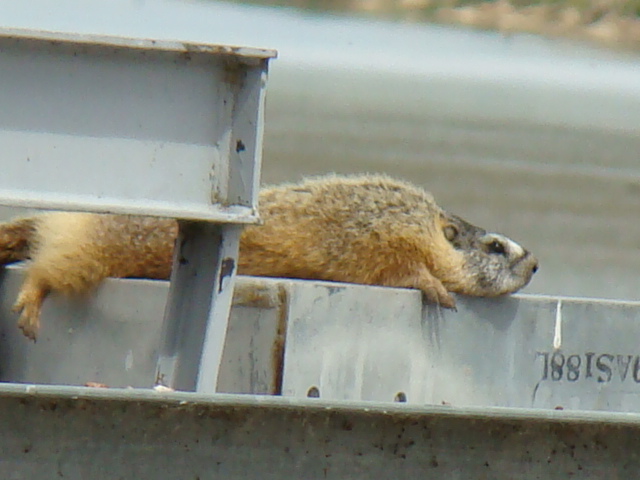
Yellow-bellied Marmot

The lands of Benton Lake National Wildlife Refuge were established to protect and provide habitat for migratory birds that cross state lines and international borders and are by law a Federal trust responsibility.

The refuge is of great value to waterfowl and shorebirds, as well as other migrating water-dependent bird species, because of the diversity of wetland and upland habitats that provide for the diverse life cycle needs of these species.